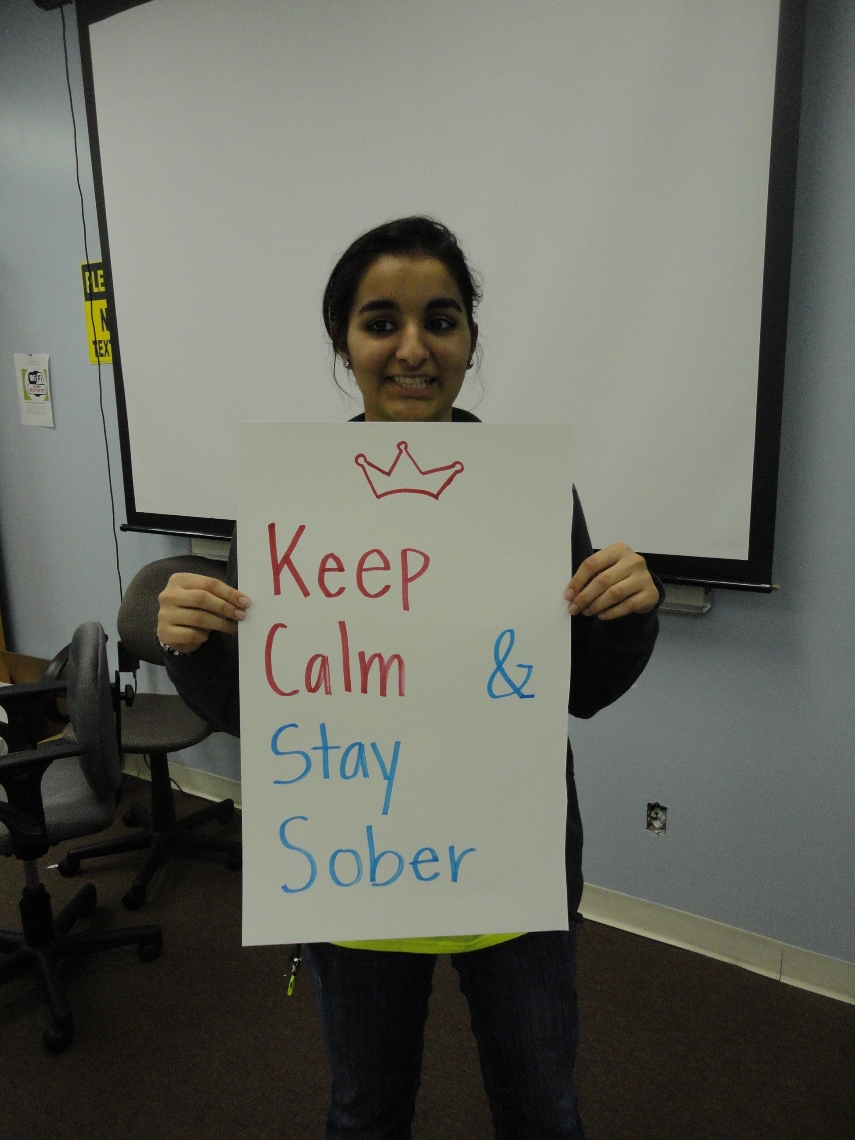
DREAM's, MS Student Advisory Board of Youth Highway Safety NDFW 2013

Mississippi High School Students participate in NDFW 2013 events.